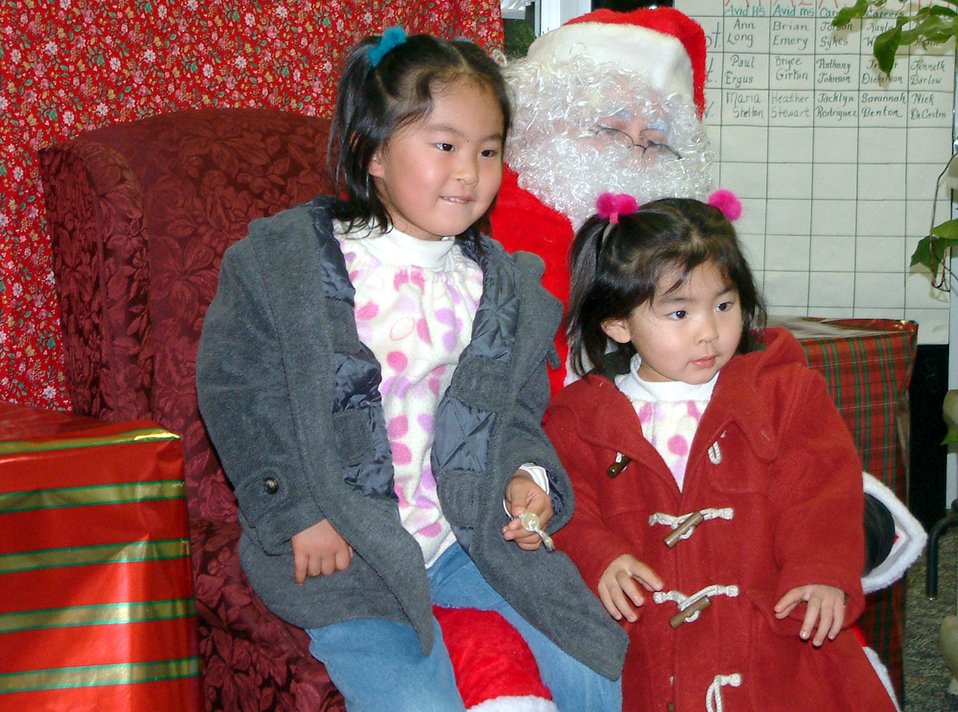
Happy ho-ho-holidays

MISAWA AIR BASE, Japan -- Two local children share their holiday dreams with Santa on Dec. 14. More than 100 local children from Misawa City visited here for a night of seeing Santa, opening gifts, face painting and singing traditional American holiday songs. The evening culminated with a tour of Misawa holiday light decorations.